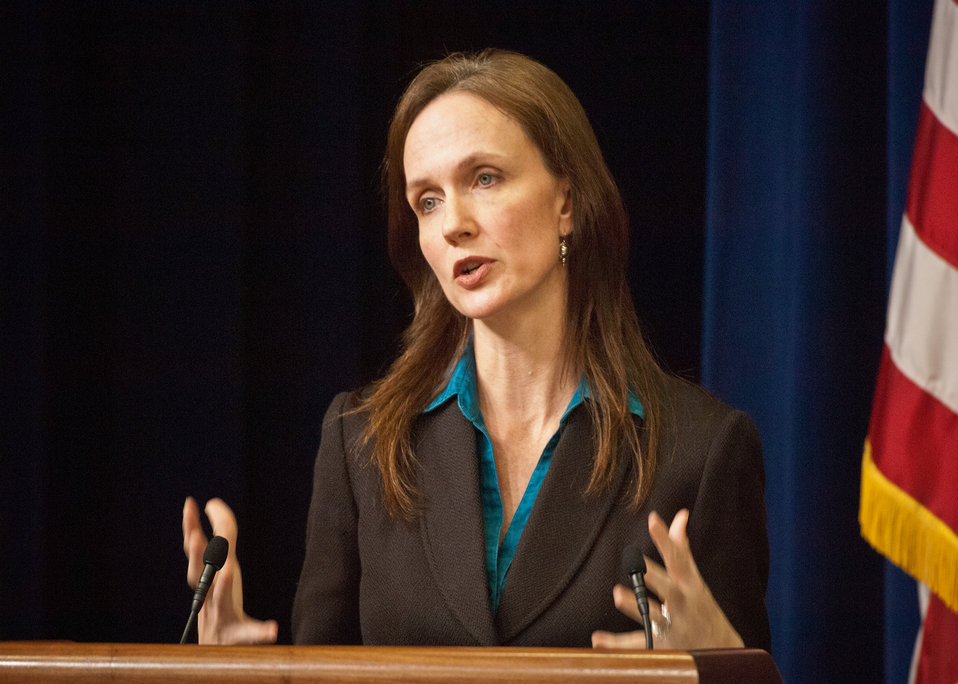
Dr. Elisabeth Hagen, Undersecretary, Food Safety discussed food safety issues at the 11th Annual Meeting of State Agriculture and Rural Leaders at the Eisenhower Executive Office Building in Washington, D.C., Friday, January 6, 2012.